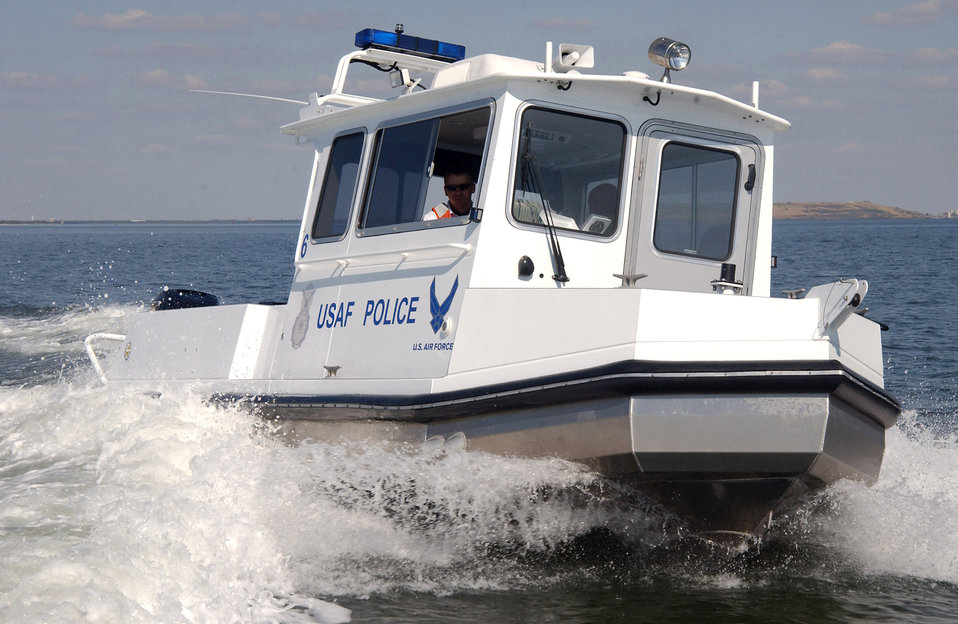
Boat Patrol

MACDILL AIR FORCE BASE, Fla. (AFPN) -- Staff Sgt. Charles Kardos operates a 26-foot boat while patrolling the seven and a half mile coastline surrounding the base Feb 15. Sergeant Kardos, a boat patrolman, and the 6th Security Forces Squadron provide 24-hour coastline protection.